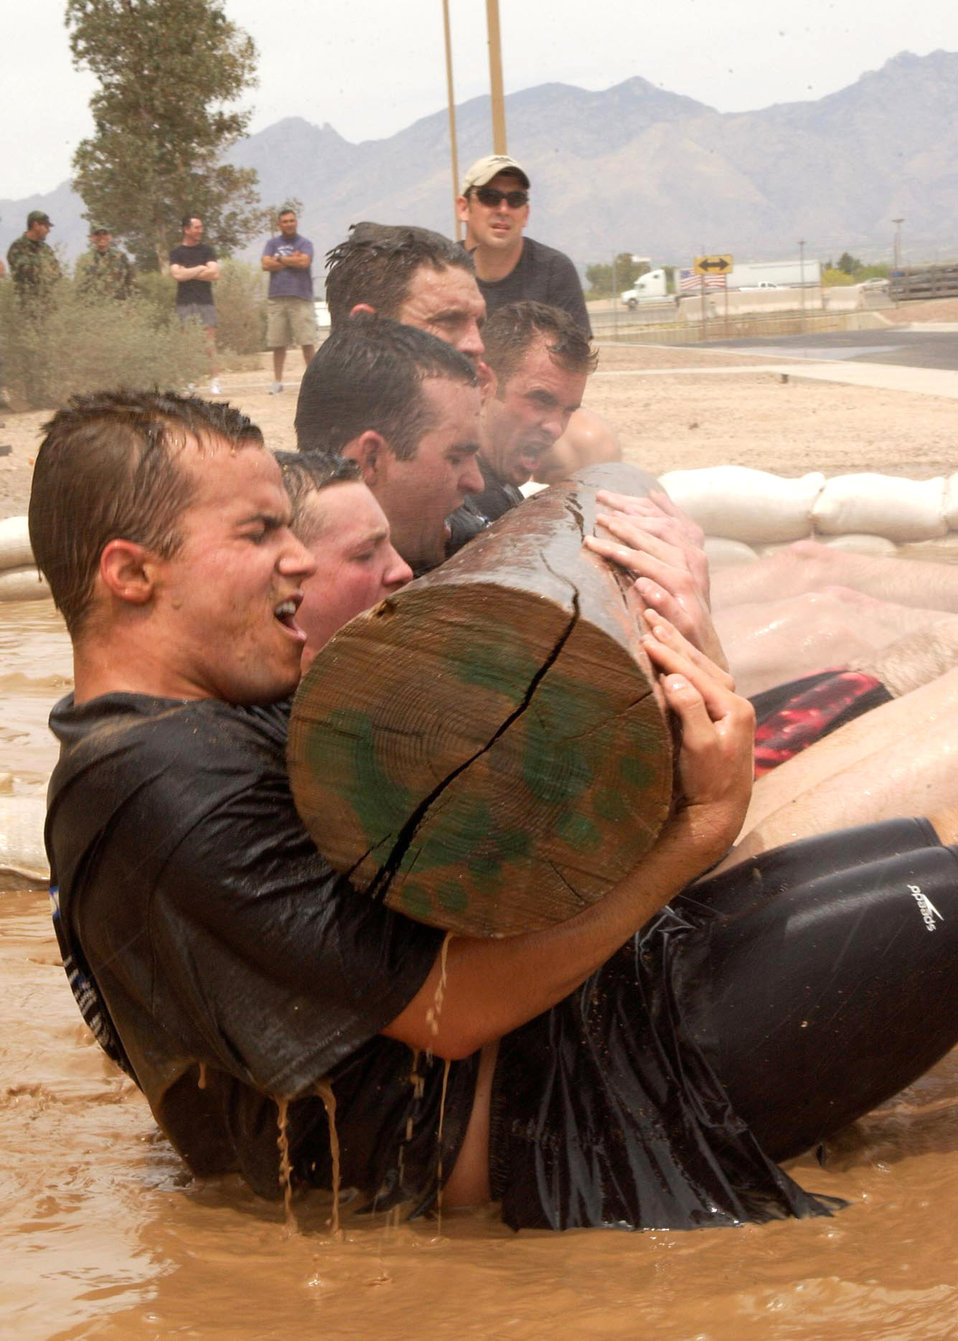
PJ selection process

Military and civilian applicants taking part in the 306th Rescue Squadron pararescue screening at Davis-Monthan Air Force Base, Ariz., do sit-ups in a mud pit while holding a wooden log on Friday, April 21, 2006.